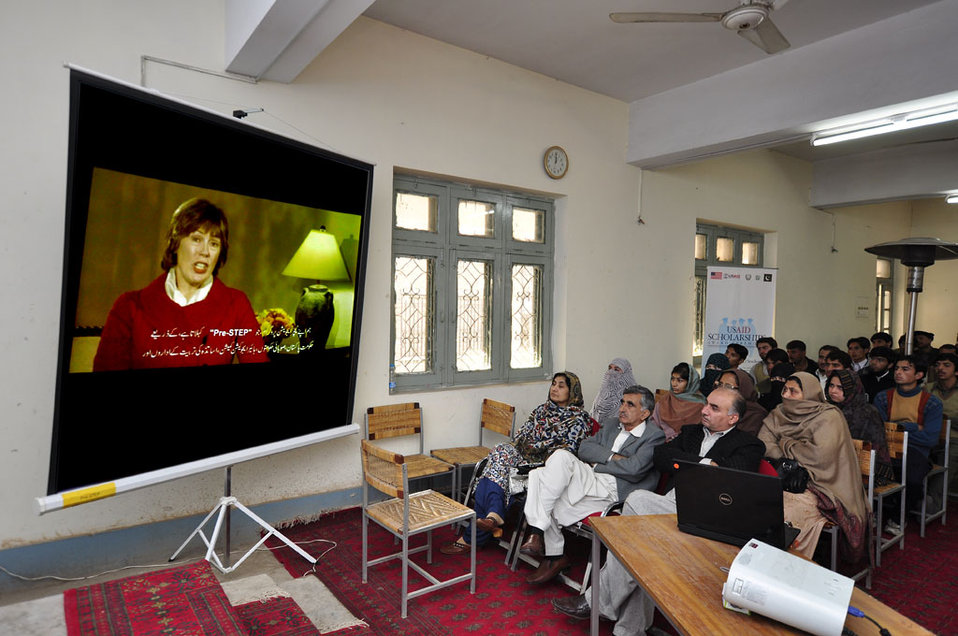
003: Peshawar, 27 Dec., 2011: USAID awarded scholarships to 44 Teacher Students from KP through its Pre-Service Teacher Education Program (Pre-STEP).

Audience listening to the video message from Dr. Marilyn Wyatt, wife of the U.S. Ambassador to Pakistan, Mr. Cameron Munter.